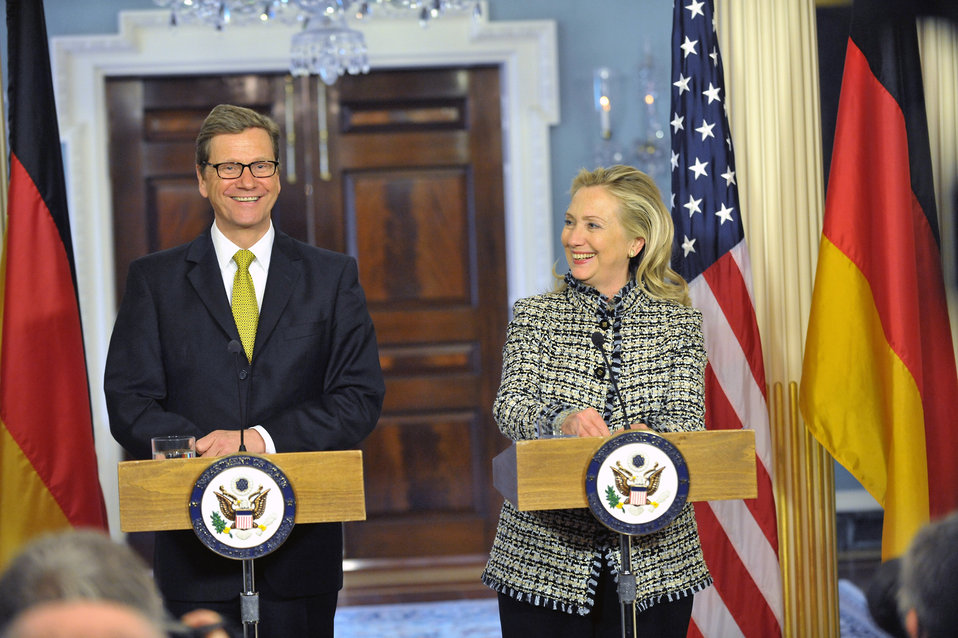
Secretary Clinton and German Foreign Minister Westerwelle Hold a Joint Press Conference

U.S. Secretary of State Hillary Rodham Clinton and German Foreign Minister Guido Westerwelle hold a joint press conference after their bilateral meeting at the U.S. Department of State in Washington, D.C., on January 20, 2012.